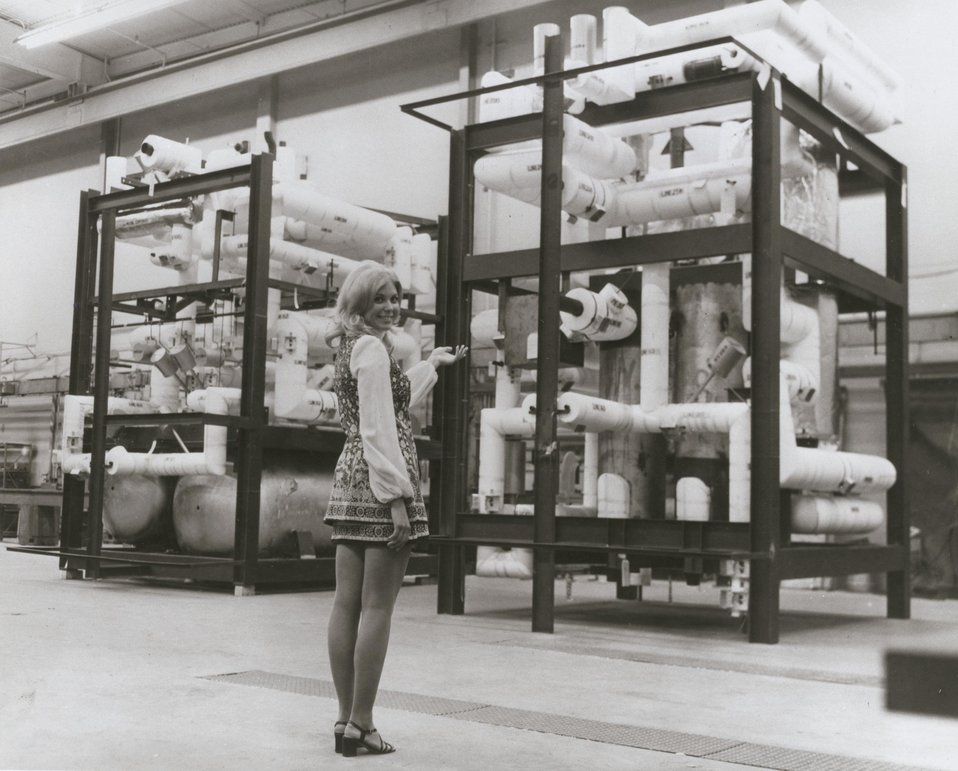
Engineering mock up of a Closed Loop Systems. c.1973